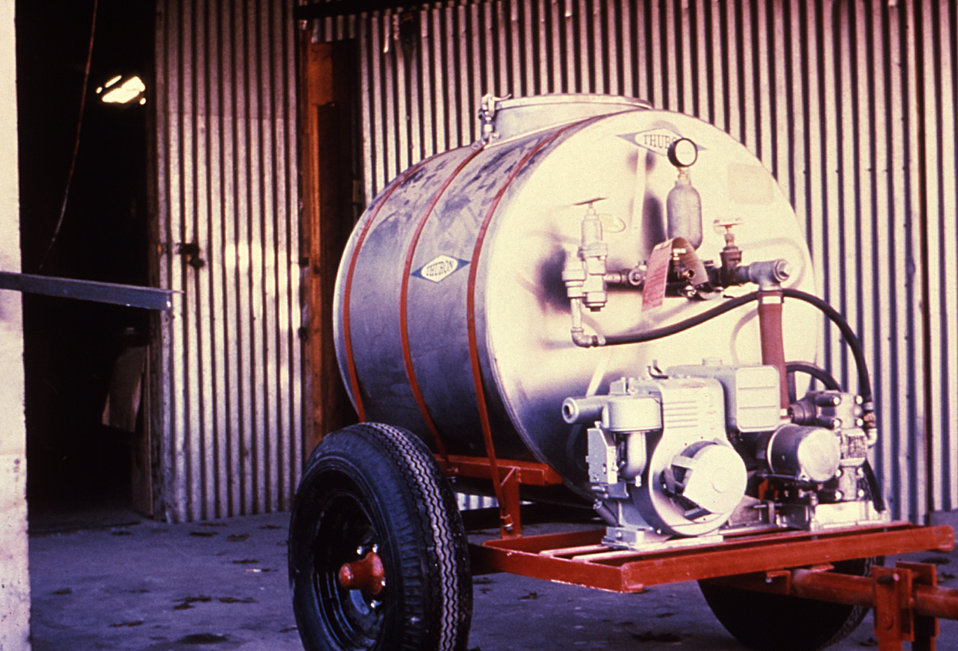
This 1981 photograph depicts an orchard sprayer, used to deliver a high volume of mist to agricultural crops, which includes insecticides, fertilizers, and chemicals that can act to regulate tree or fruit growth.